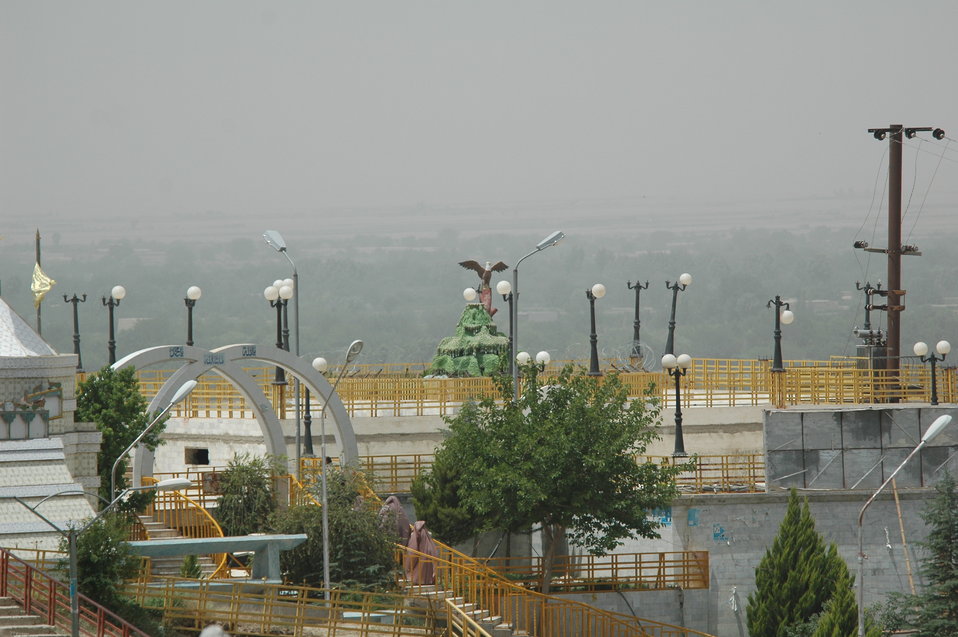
CODEL Berman